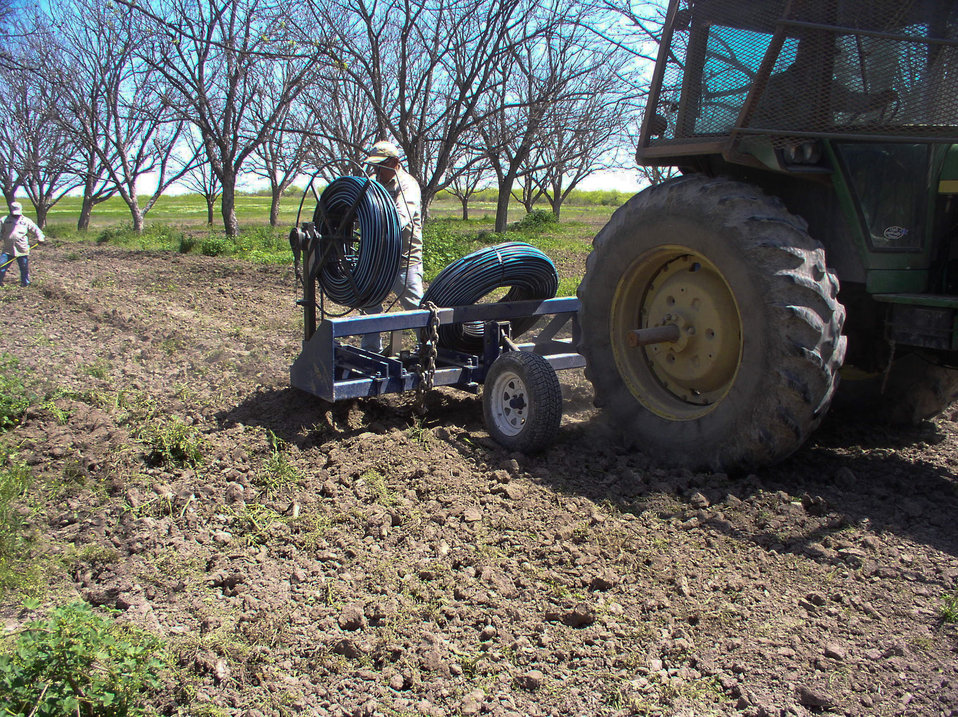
A contractor loads a fresh spool of tubing onto the device that makes two 10' furrows and buries two lines of drip tubing at the same time as a tractor pulls it between two rows of pecan trees, during the installation of micro irrigation drip tube in one of the pecan orchards at Arrowhead Farms of Crystal City, TX, on March 29, 2010. The farm, has been owned by Mr. Akram Mohammad since 2005. In all, about 25,000 feet of drip tubing was used. The 719-acre farm with 10,000 trees, features some orchards with underground micro irrigation system that feeds water to the roots of 4,380 pecan trees on 146 acres. Mr. Mohammad said, “USDA (U.S. Department of Agriculture) was essential to my business and trees surviving the recent exceptional drought. The trees were stress free thanks to underground micro-irrigation. This is essential to the future growth of Texas agriculture and good for America.” U.S. Department of Agriculture’s (USDA) Environmental Quality Initiative Program (EQIP) awarded Mr. Mohammad a $130,000 grant in 2008. He provided $26,000 for the balance of the $156,000 total cost to install a 146-acre underground micro-irrigation for 4,380 trees.